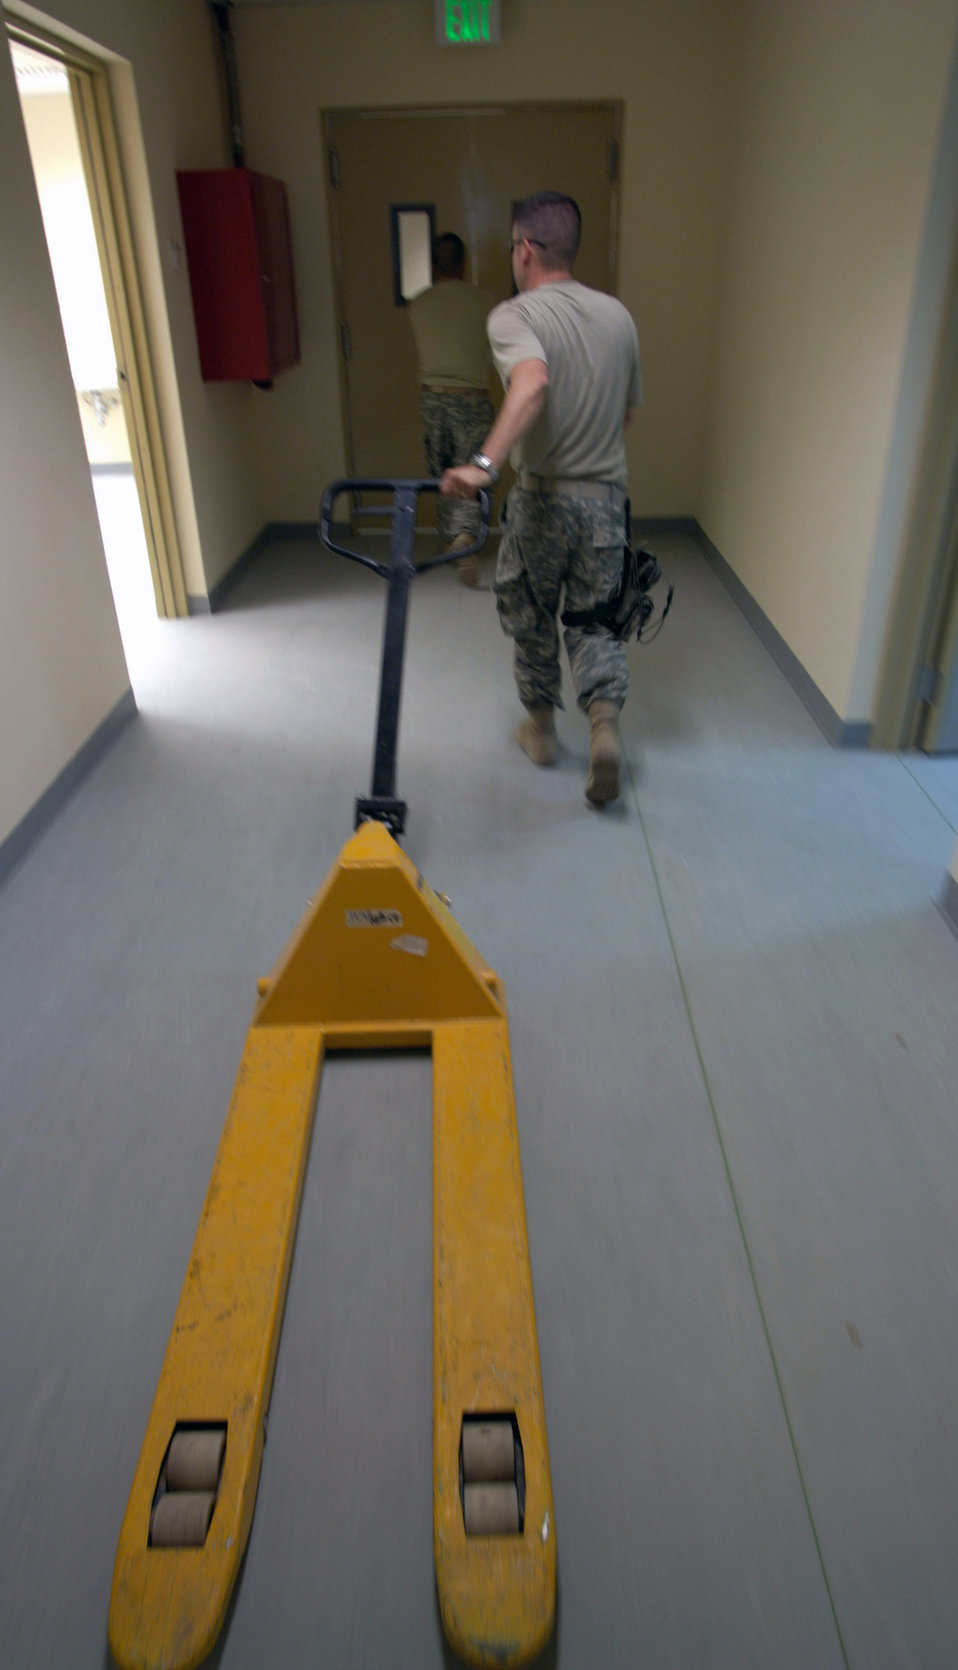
Airmen mentorship helps develop Afghan hospital

Master Sgt. Doug Suddueth heads for another load of medical equipment to install Aug. 17 in Afghanistan. The medical equipment is being transported to the new $6.5 million, 50-bed hospital on the Afghan national army's Hero Camp outside Kandahar Airfield in southern Afghanistan. Sergeant Suddueth is a medical logistics craftsman and Afghan national army mentor deployed from Maxwell Air Force Base, Ala. He is assigned to the Combined Security Transition Command-Afghanistan on Camp Eggers from Kabul, Afghanistan.